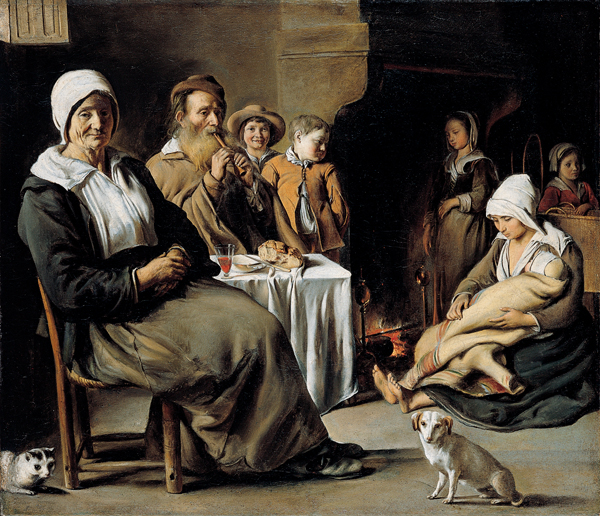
'Peasant Interior with an Old Flute Player', oil on canvas painting by Louis (probably) Le Nain, c. 1642, Kimbell Art Museum